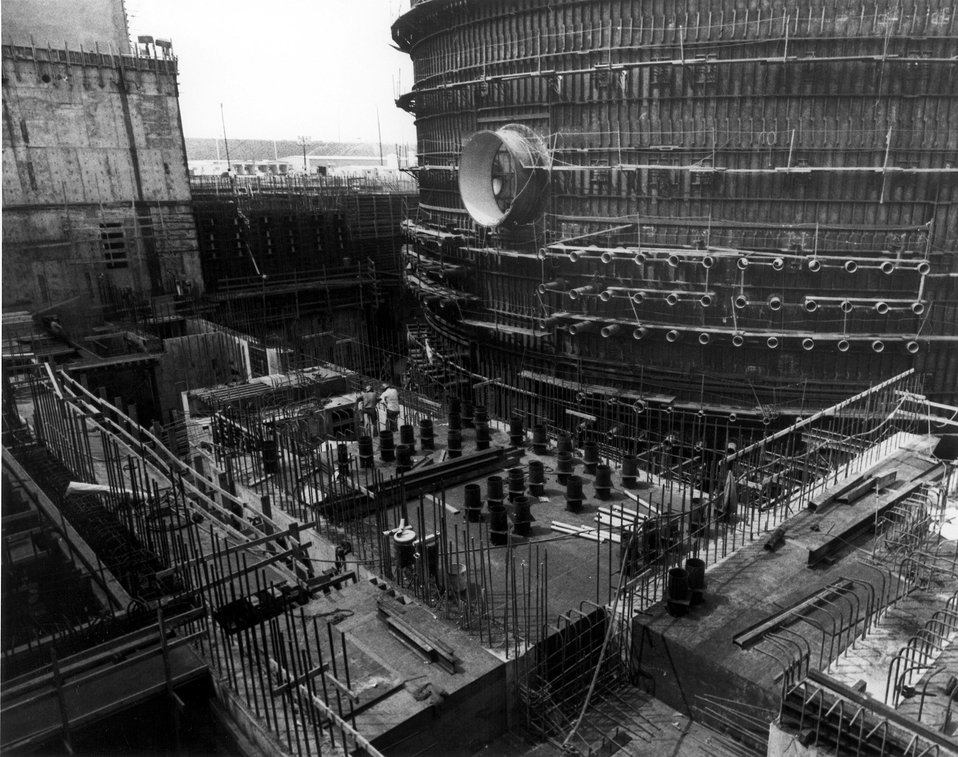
A view during construction of the reactor containment shell to house a 829,000 Kw(e) pressurized water reactor at the Joseph M. Farley Nuclear Plant Unit 2 near Dothan, AL.